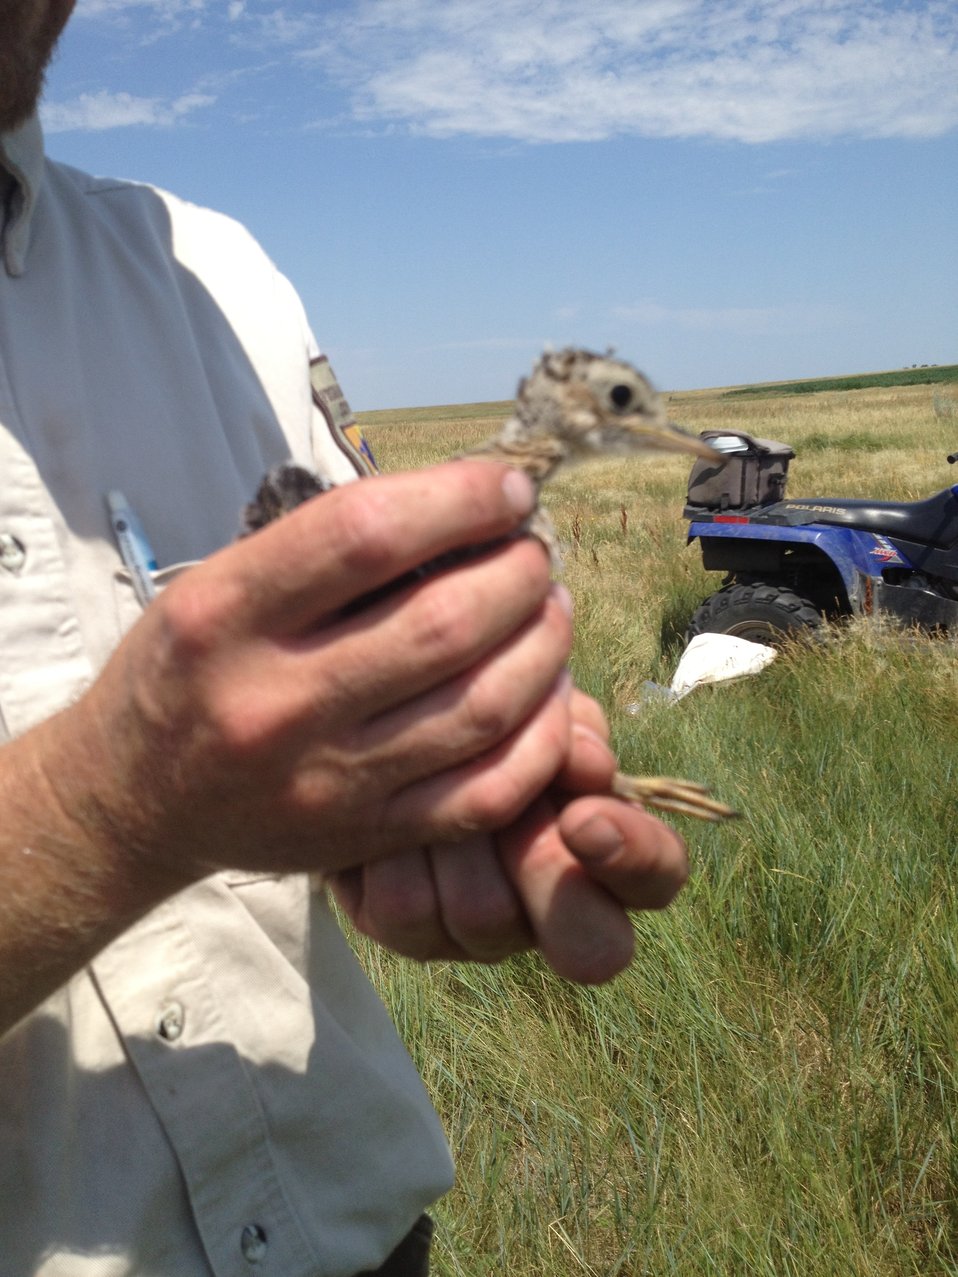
Baby Upland Sandpiper